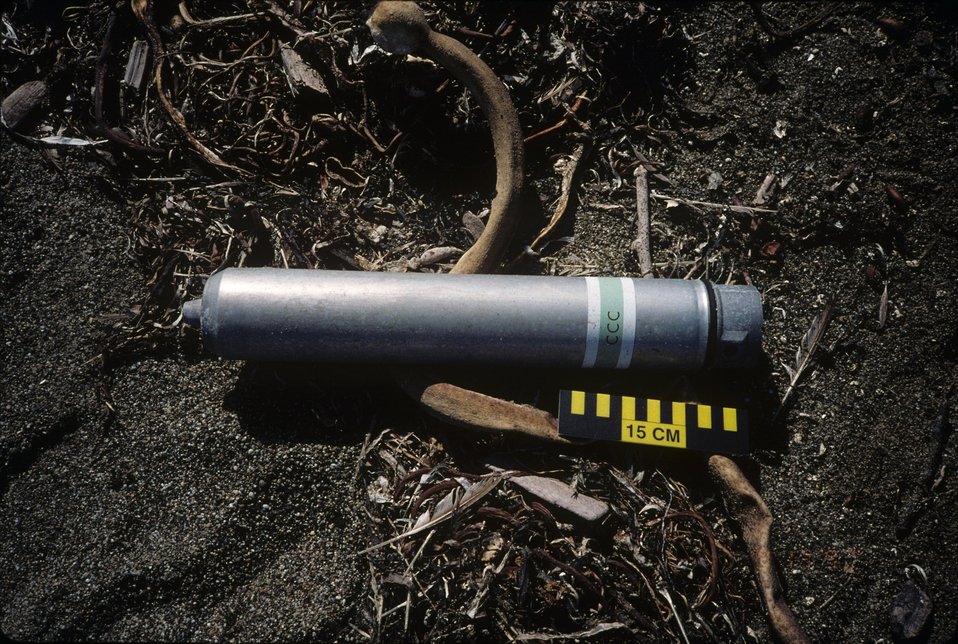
Point Reyes Great Beach south end. Marine debris - a metallic cannister washed up on the beach.